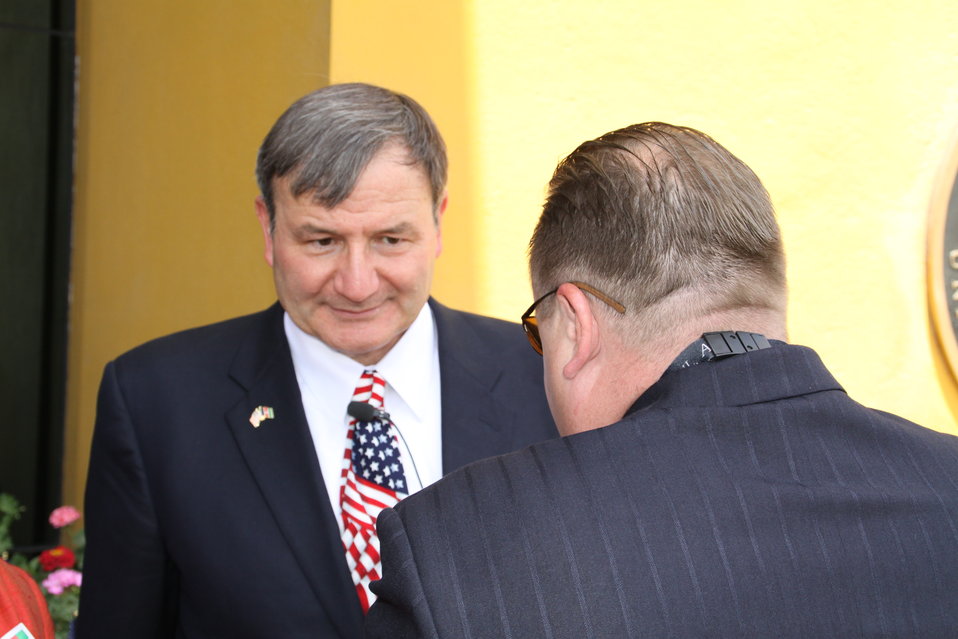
Kabul Official July 4th Celebration